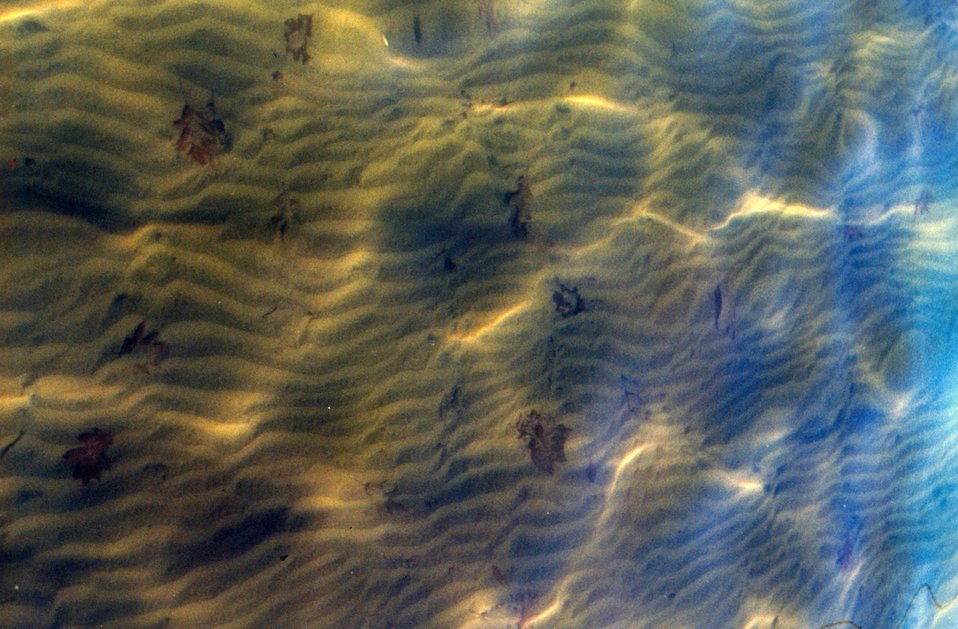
Ripples on the Patuxent River river bottom. These were seen on a day having exceptionally clear water.